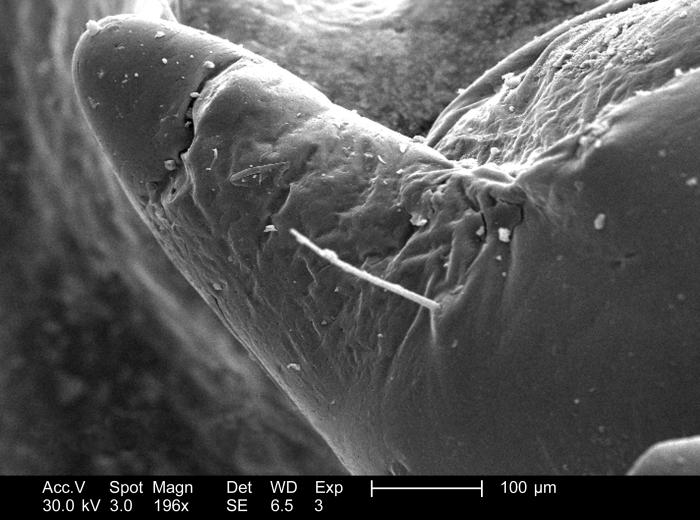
Magnified 196x, this scanning electron micrograph (SEM) depicted a chitinous exoskeletal protuberance projecting from the lateral aspect of a millipede's terminal body segment. This arthropod was found deceased on the grounds of the Decatur, Georgia suburbs. Just anterior to the blunt outcropping was a single seta, or sensorial 'hair', also composed of chitin. Note the debris particulates scattered on the insect's surface, which had been picked up from its environmental surroundings.